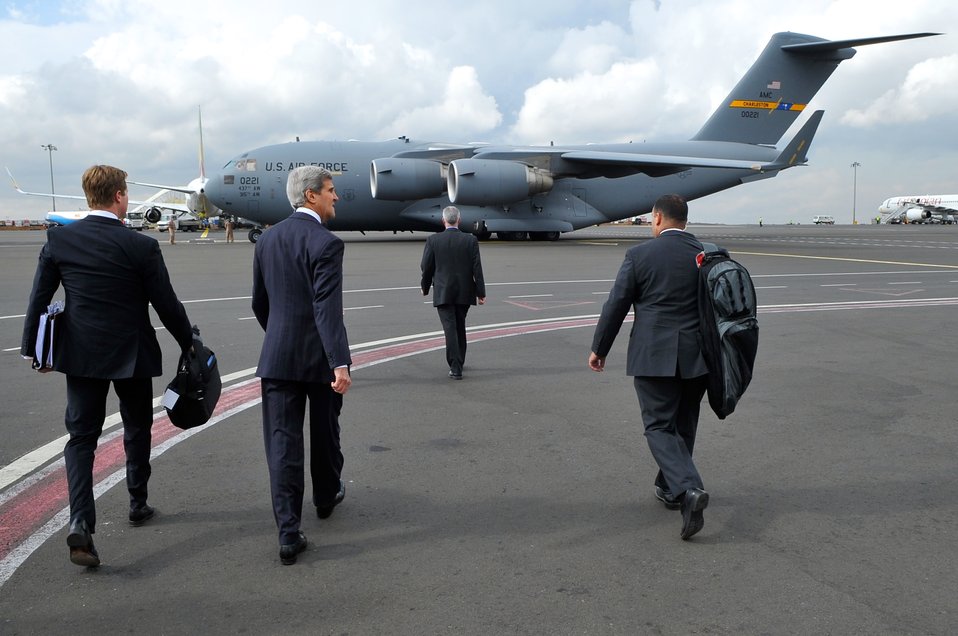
Secretary Kerry Approaches C-17 Flying Him from Ethiopia to South Sudan

U.S. Secretary of State John Kerry walks toward an Air Force C-17 plane for the flight from Addis Ababa, Ethiopia, to Juba, South Sudan, on May 2, 2014.